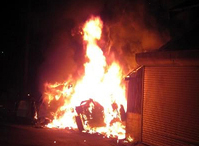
Misawa Airmen rescue Japanese citizen

A car driven by a Japanese citizen crashed into a house and burst into flames Aug. 15 in Towada, Japan. Eight Airmen from Misawa Air Base assisted in rescuing the driver of the vehicle.